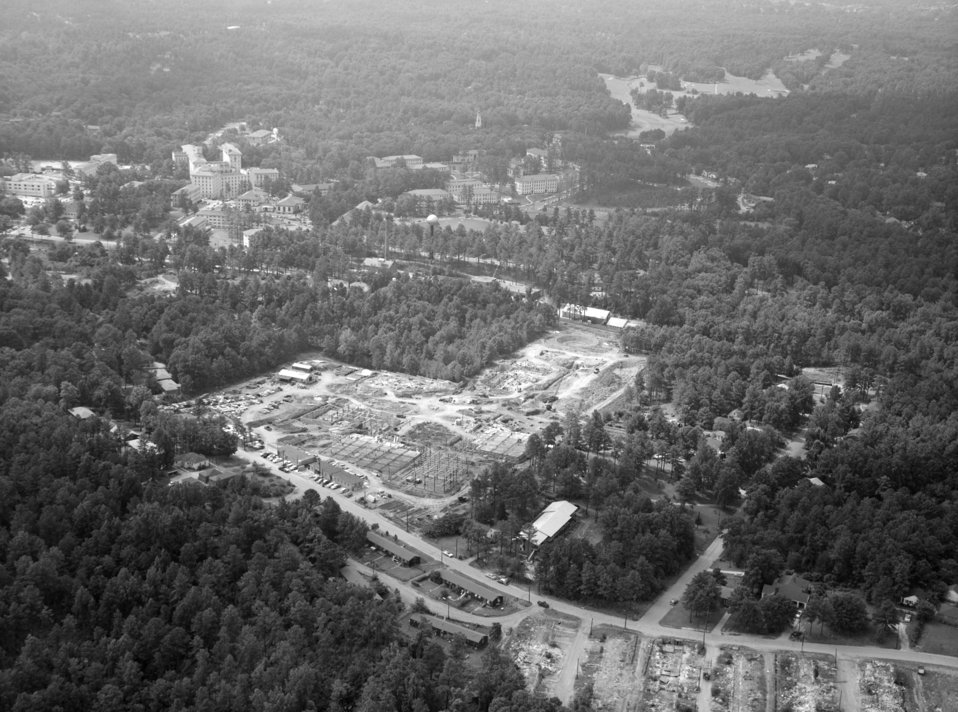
An aerial view of the CDC Clifton Road, Atlanta, Georgia, Roybal Campus under construction in 1958.